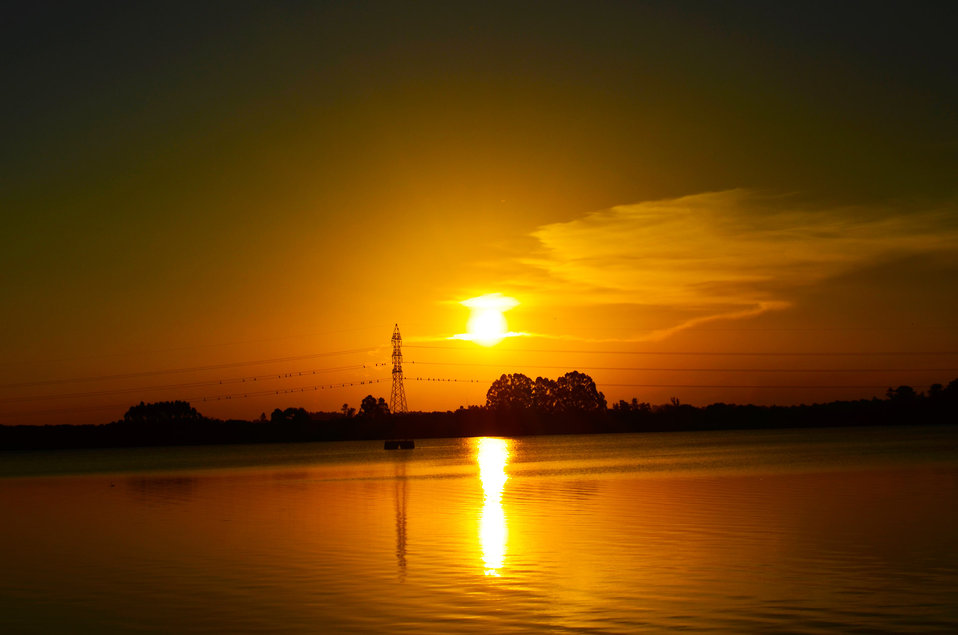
Sunset - lago dourado - santa cruz do sul - rs.